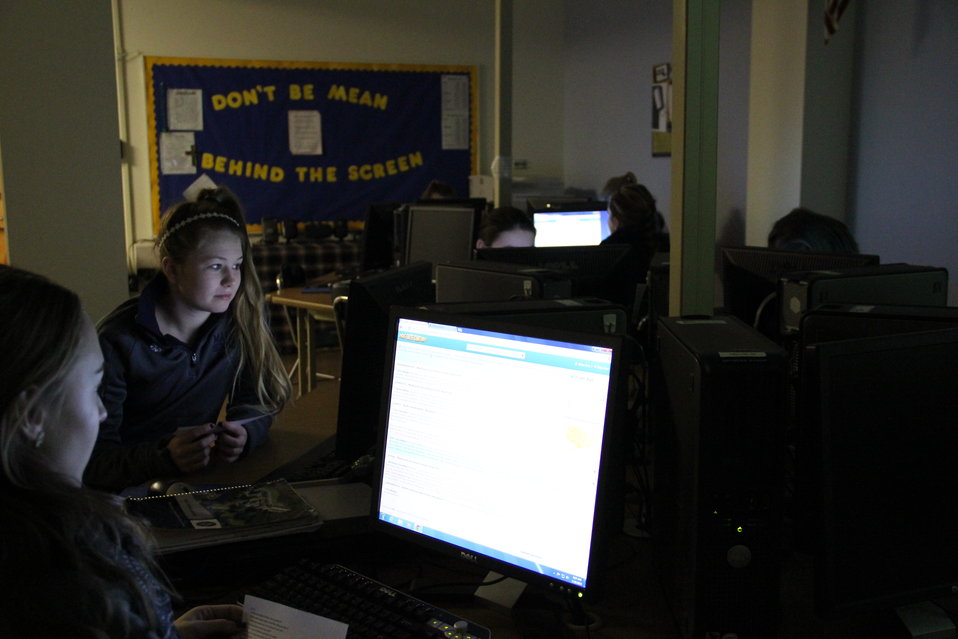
Checking the Facts: NDFW 2014

Teens at Mount Alvernia High School in Newton, Mass. take the NIDA's IQ Challenge during NDFW's CHAT DAY 2014.